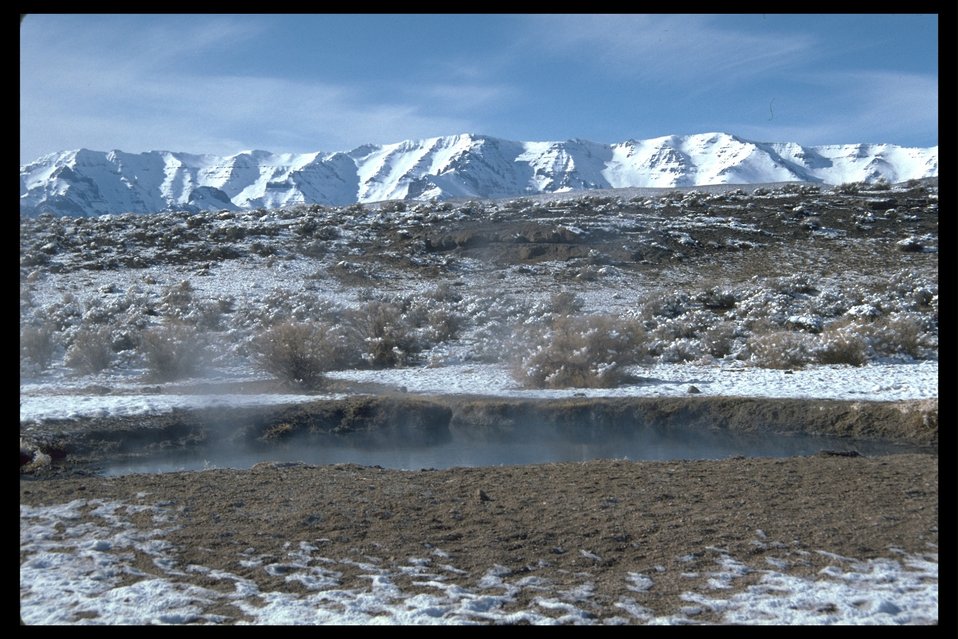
East Alvord at Mickey Hot Springs looking at Steens Mountain. (WSA 2-73A)